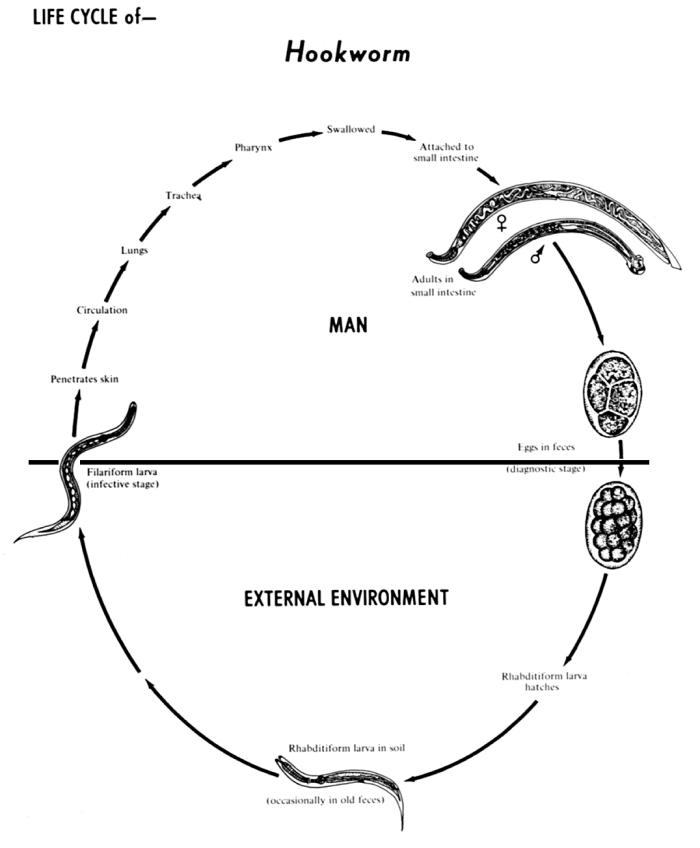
The human hookworms include two nematode (roundworm) species, Ancylostoma duodenale and Necator americanus.